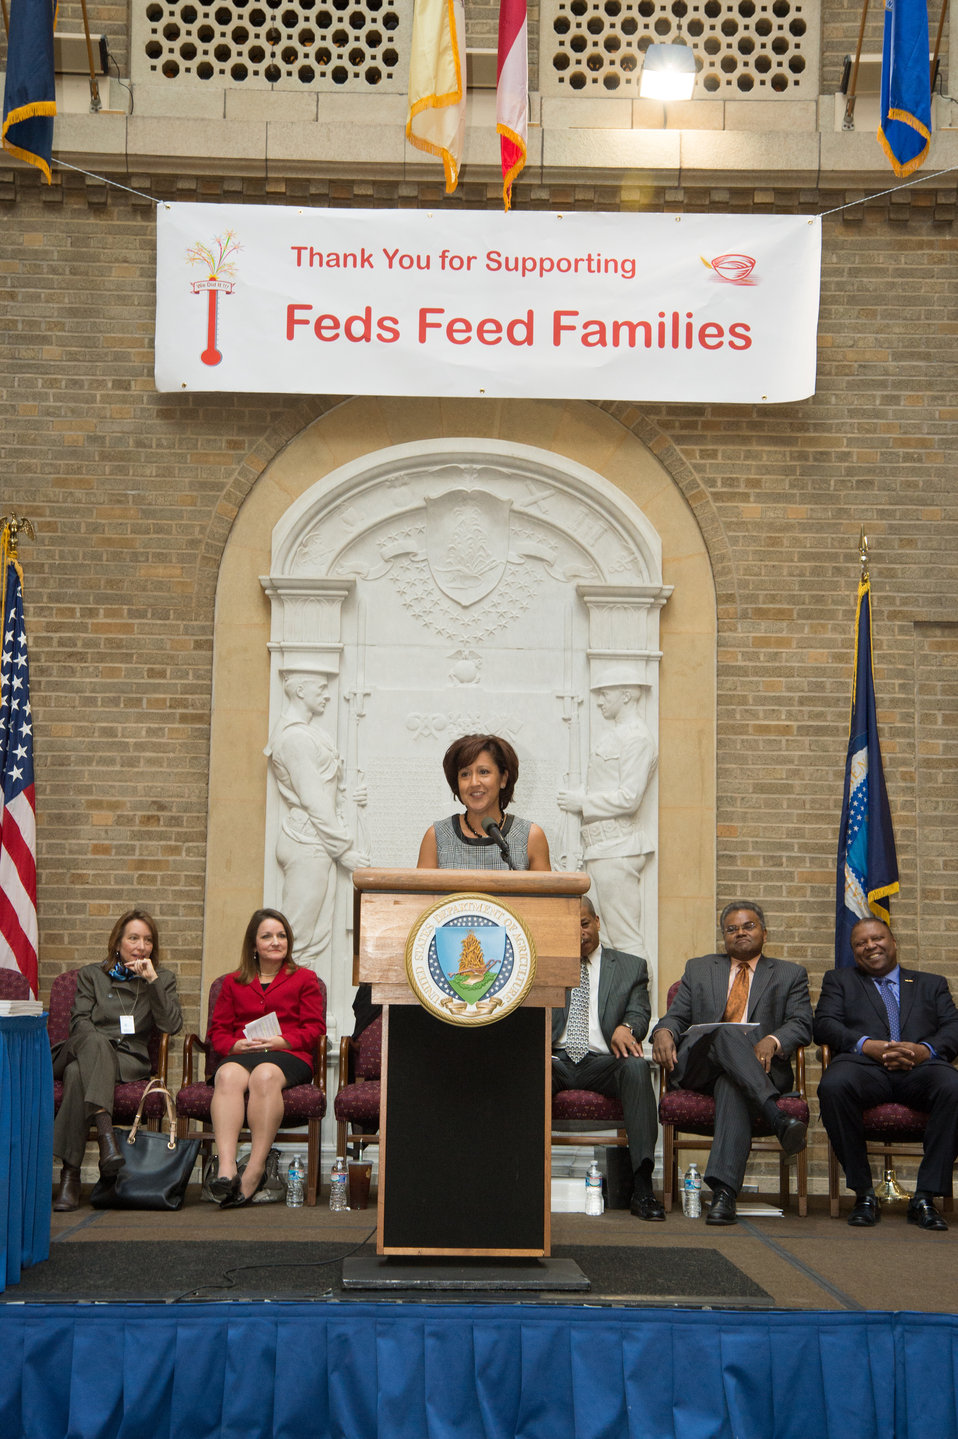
Kathryn Medina, Executive Director, Chief Human Capital Officers Council (CHCO) addresses employees and partner agencies at the United States Department of Agriculture Feds Feed Families closing ceremony, on Wed., Nov. 13, 2013 in Washington, D.C. The CHCO Council is responsible for leading the strategic management of human capital for all federal employees. Federal employees nationwide stepped up the challenge of Feds Feed Families and gathered 9 million pounds of food for food banks across the nation and the National Capital Region for families in need setting an all time record high.